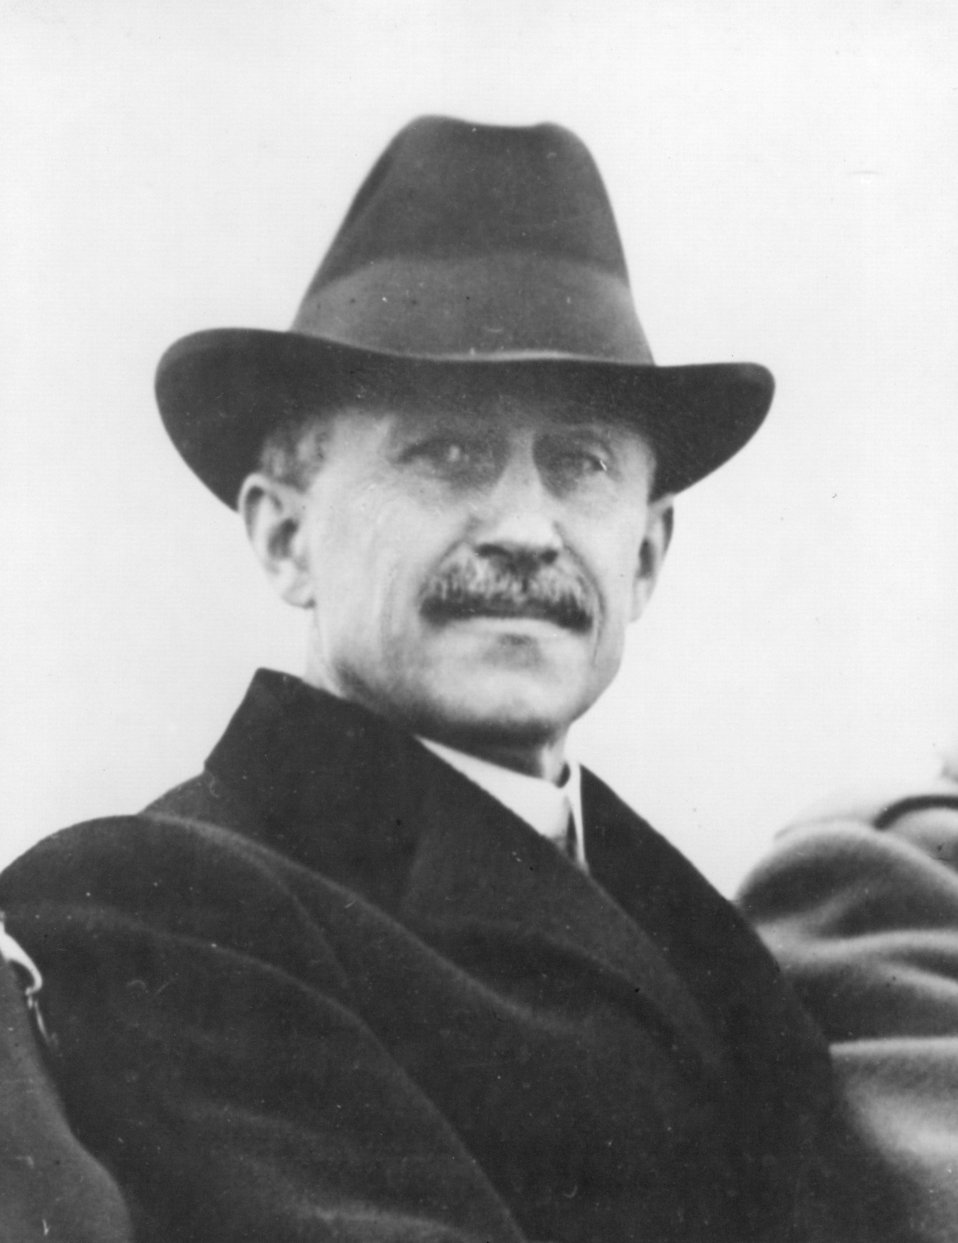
Orville Wright at Air Races

Early Years -- Orville Wright at Air Races, Detroit, Mich., 1922.